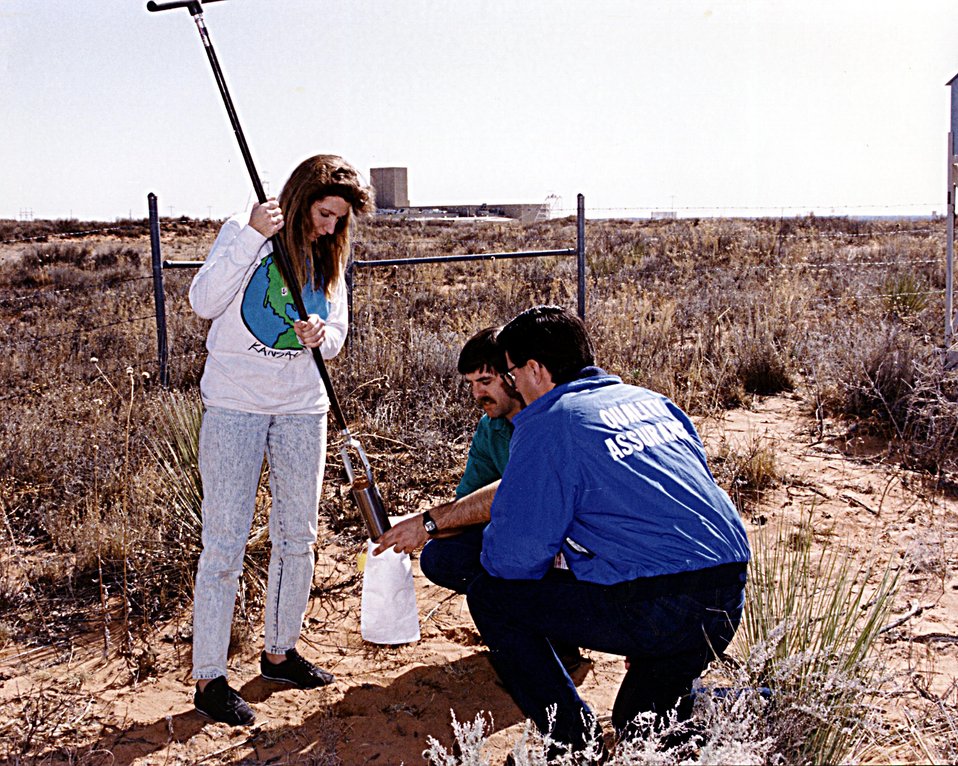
WIPP SCIENTISTS MONITORING SOIL SAMPLES.

THE WASTE ISOLATION PILOT PLANT MAINTAINS A RADIOLOGICAL BASELINE PROGRAM THAT INCLUDES MONITORING SOIL, WATER, AIR, AND PLANT LIFE SAMPLES IN THE SURROUNDING AREA. THE WIPP, LOCATED IN SOUTHEASTERN NEW MEXICO, IS A DOE RESEARCH AND DEVELOPMENT FACILITY DESIGNED TO DEMONSTRATE THE SAFE DISPOSAL OF DEFENSE RADIOACTIVE WASTE IN ANCIENT SALT BEDS.